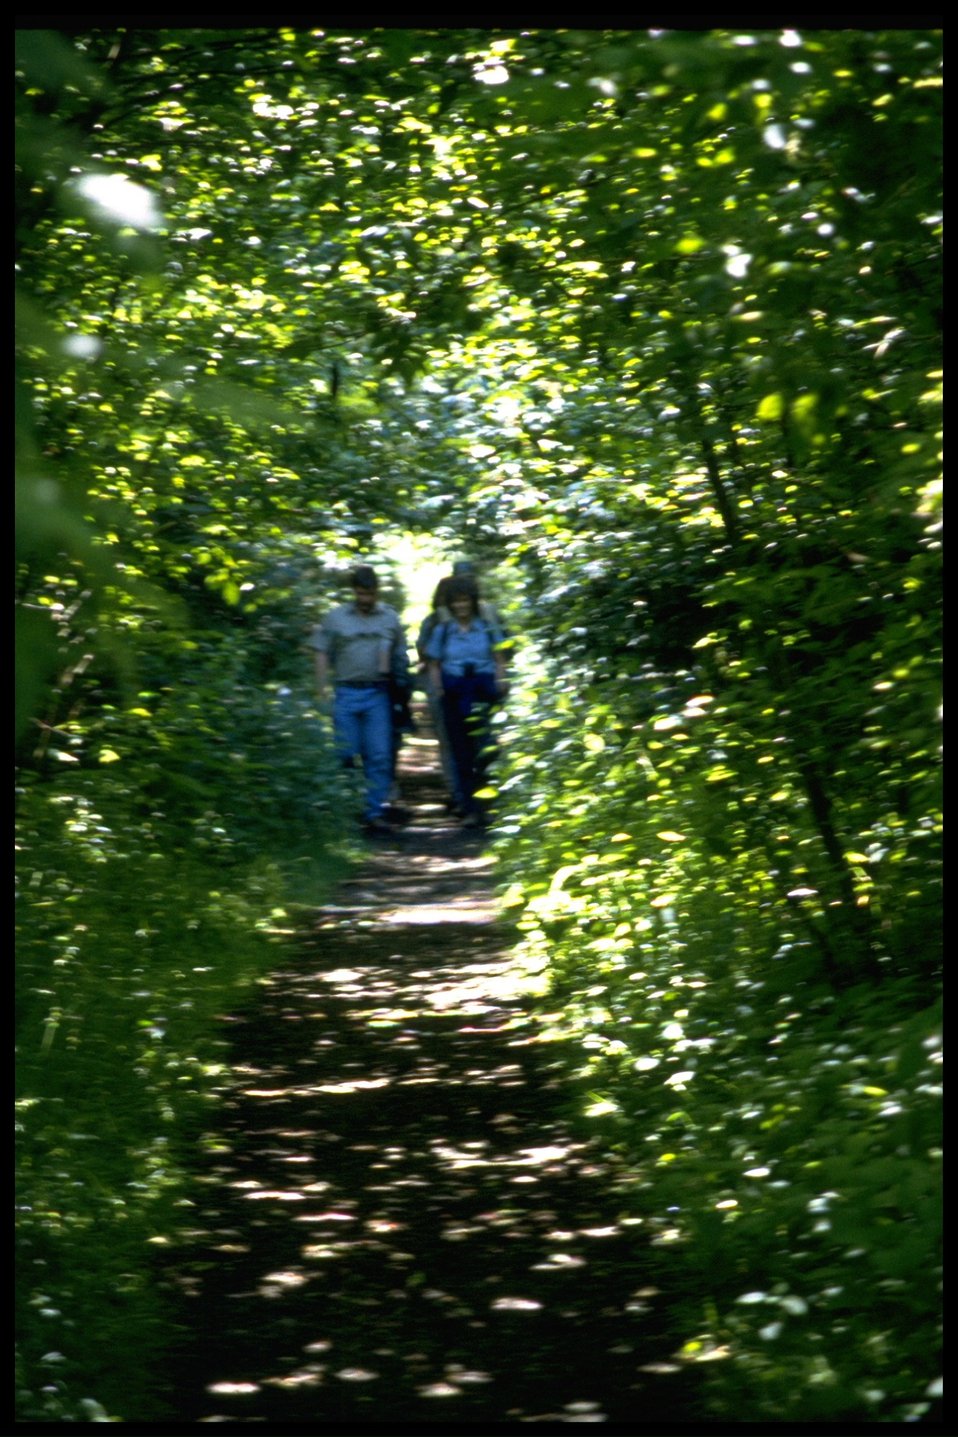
Trail at Watmough Bay.